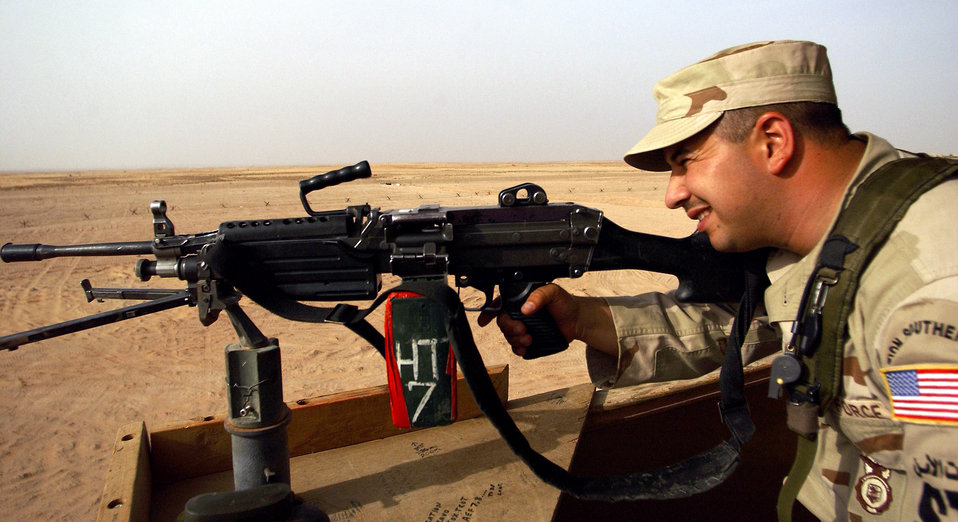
Taking aim

FILE PHOTO -- Staff Sgt. Angel Degennaro sets up an M-249 machine gun at a forward-deployed location supporting Operation Iraqi Freedom. Degennaro is a security forces craftsman from Carswell Air Reserve Station in Fort Worth, Texas. He is one of more than 14,000 Reserve airmen still activated.